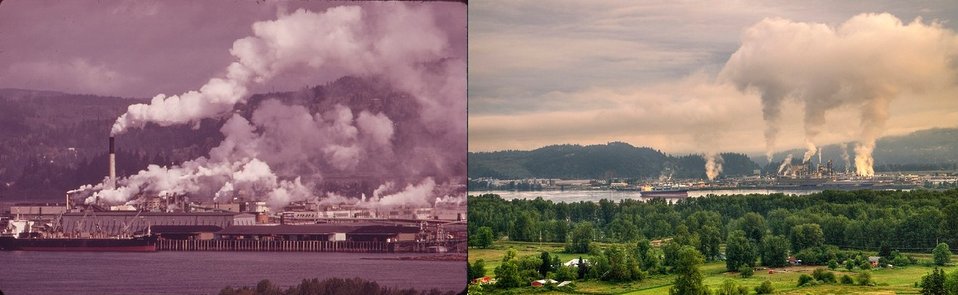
Columbia River 1973 and 2012

'Then' Documerica Photo: April, 1973 Weyerhauser Paper Mills and Reynolds Metal Plant are both located in Longview, on the Columbia River. Intense industrial concentration causes visible pollution by David Falconer.
'Now' State of the Environment Photo: June, 2012 NW Passage of the Columbia River by Craig Leaper.

David Falconer documented the fuel shortage in the west during the 1970s, as well as water pollution in the area at the time. Falconer took photos from April 1973 to May 1974 mainly across the states of Oregon and Idaho.

Join in at www.flickr.com/groups/ourenvironment